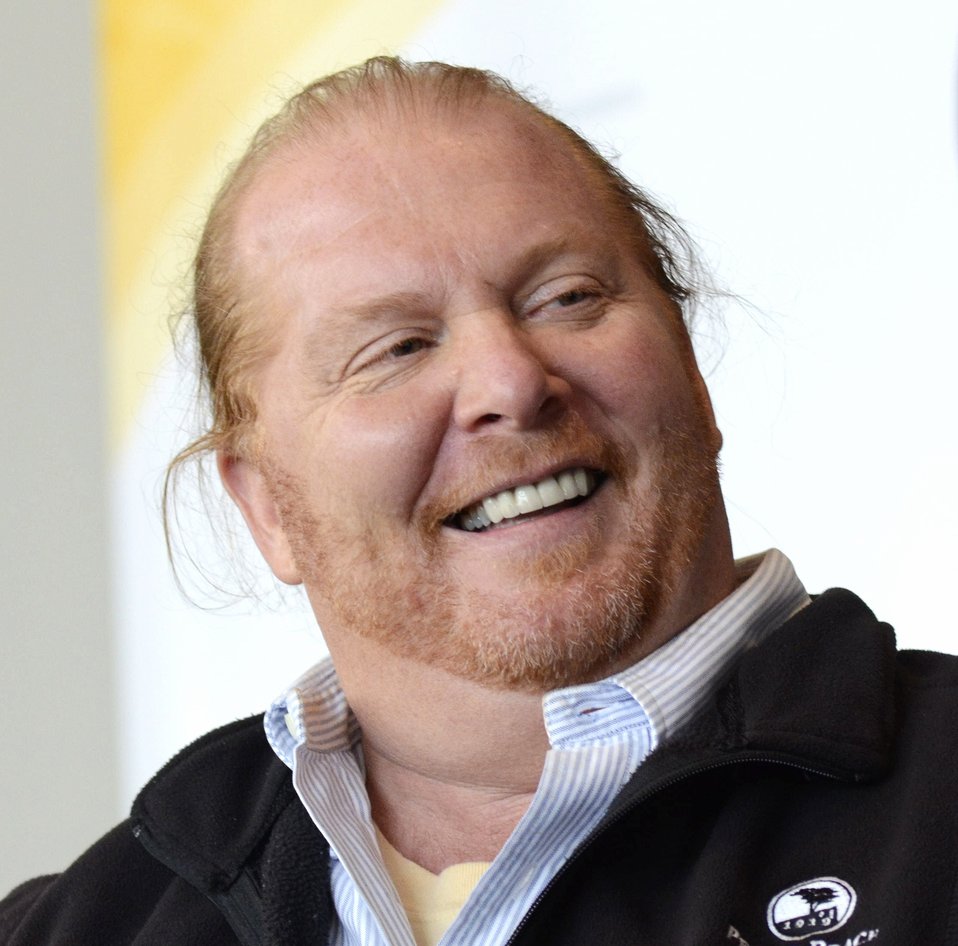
The Atlantic Senior Editor Corby Kummer interviews Chef, restaurateur, author, and television personality Mario Batali at the 3rd Annual Food Summit held at the W Hotel in Washington, D.C. on Thursday, May 24, 2012. The Food Summit event includes interviews, panel discussions and symposia with leading authorities on issues related to food, food security, and nutrition.